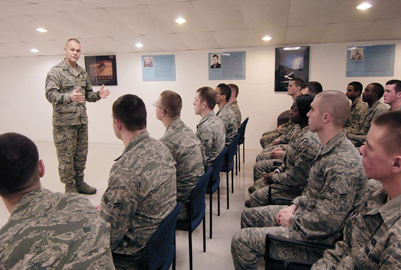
CMSAF visits Tinker AFB Airmen

Chief Master Sgt. of the Air Force James A. Roy talks with Airmen attending Tinker Air Force Base's first term Airmen center Jan. 6, 2011, at Tinker AFB, Okla. The chief touched on the Air Force's future and the importance of training before thanking them for their service.